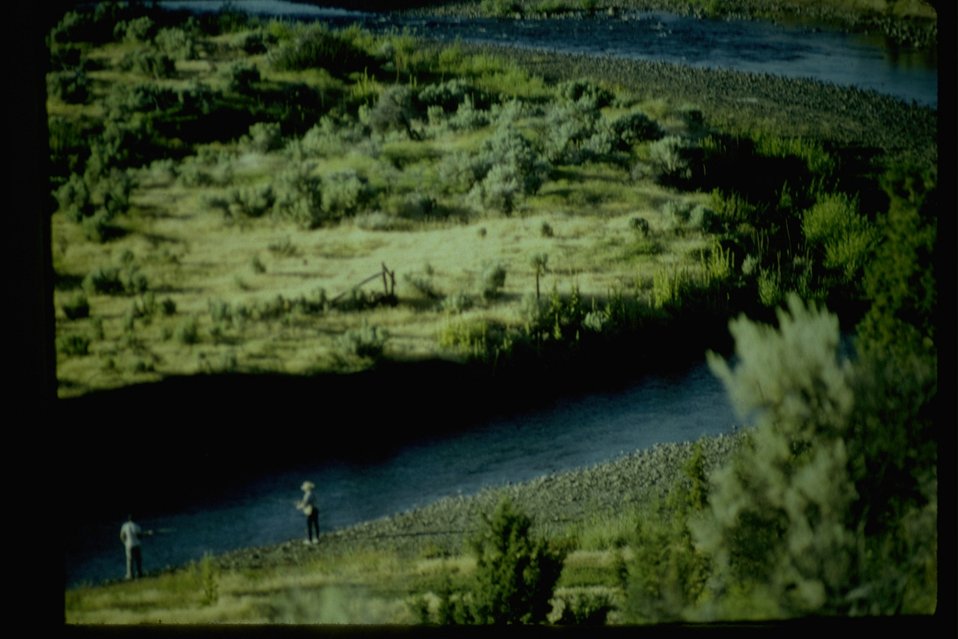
People fishing in the Donner und Blitzen wild & scenic River near the Steens.